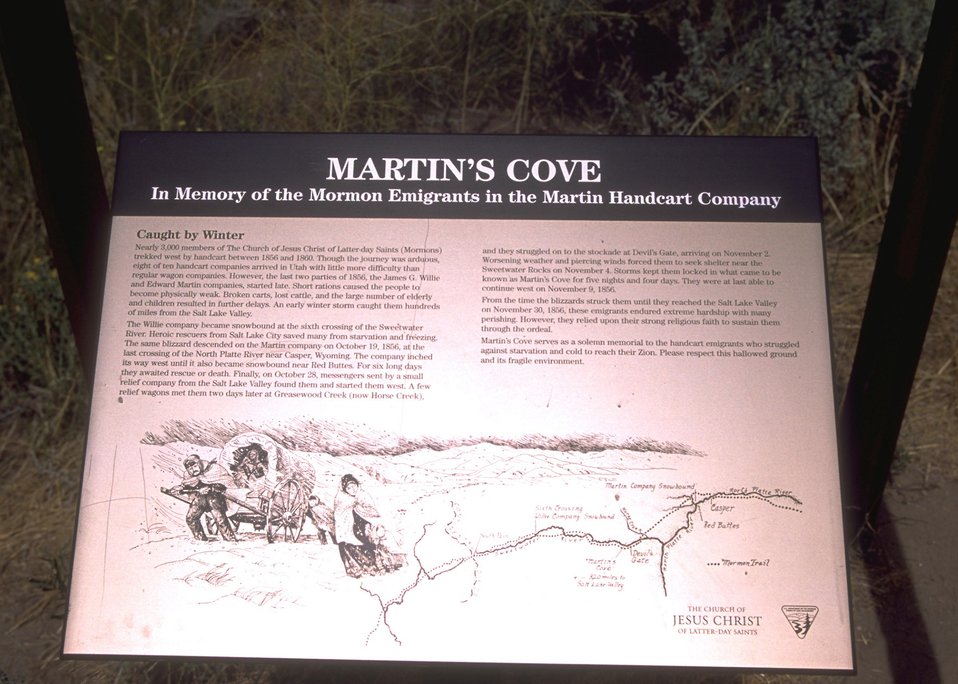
Martin's Cove interpretative sign, Rawlins Field Office.